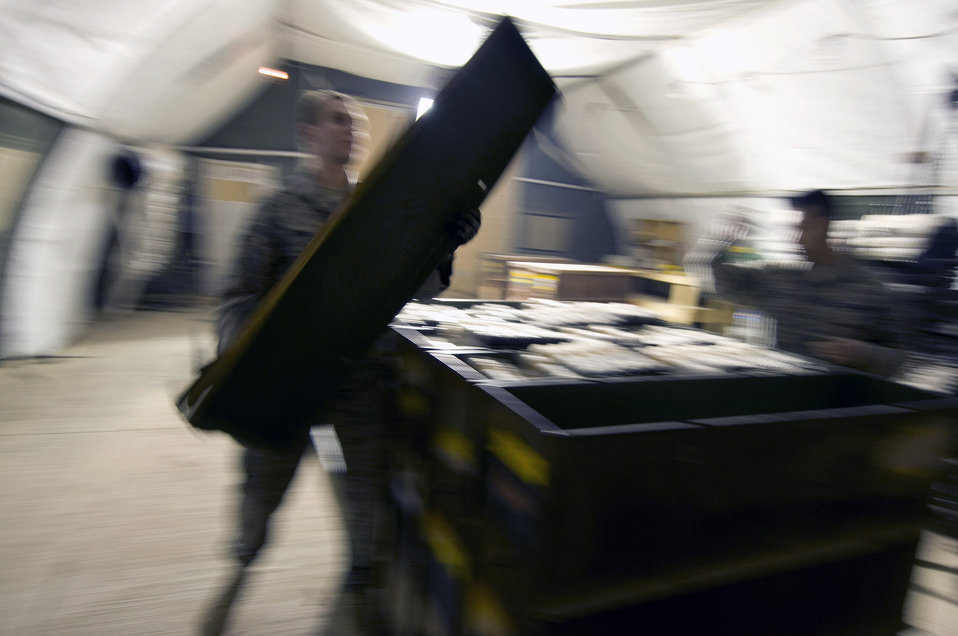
Feeding the Thunderbolt II

Airman 1st Class Jeb Snow removes the lid from an ammo container at Dec. 2 Bagram Airfield, Afghanistan. Airman Snow is a 455th Expeditionary Maintenance Squadron munitions systems apprentice deployed from Mountain Home Air Force Base, Idaho. He hails from Wasilla, Alaska.